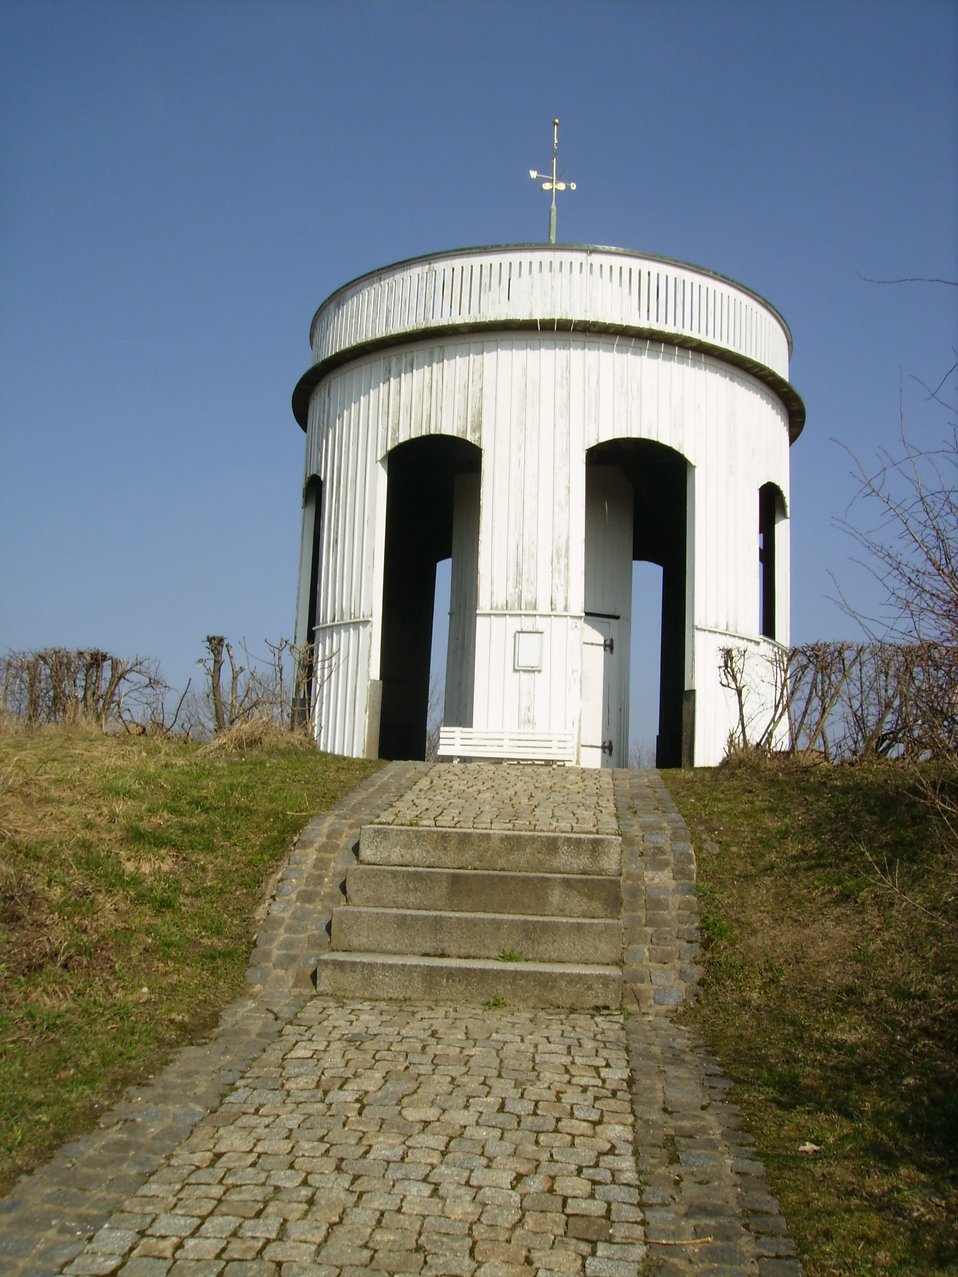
Altan (lookout tower) on the summit of the Hutberg above the Sachsen town of Herrnhut in Kreis Görlitz.